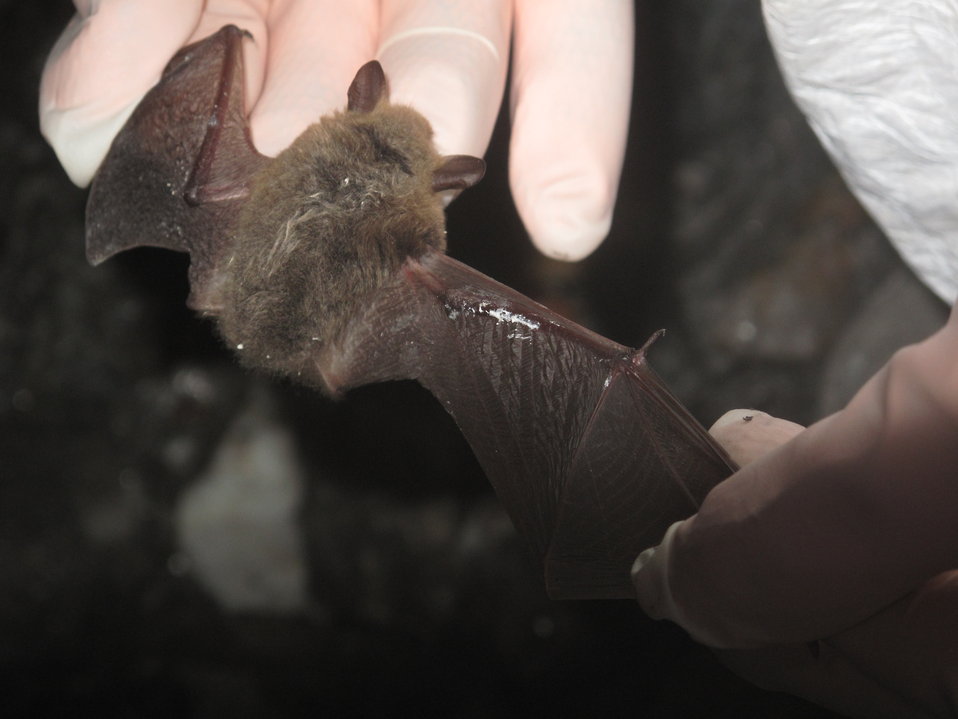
Bat with visible fungus on wing, NC mine